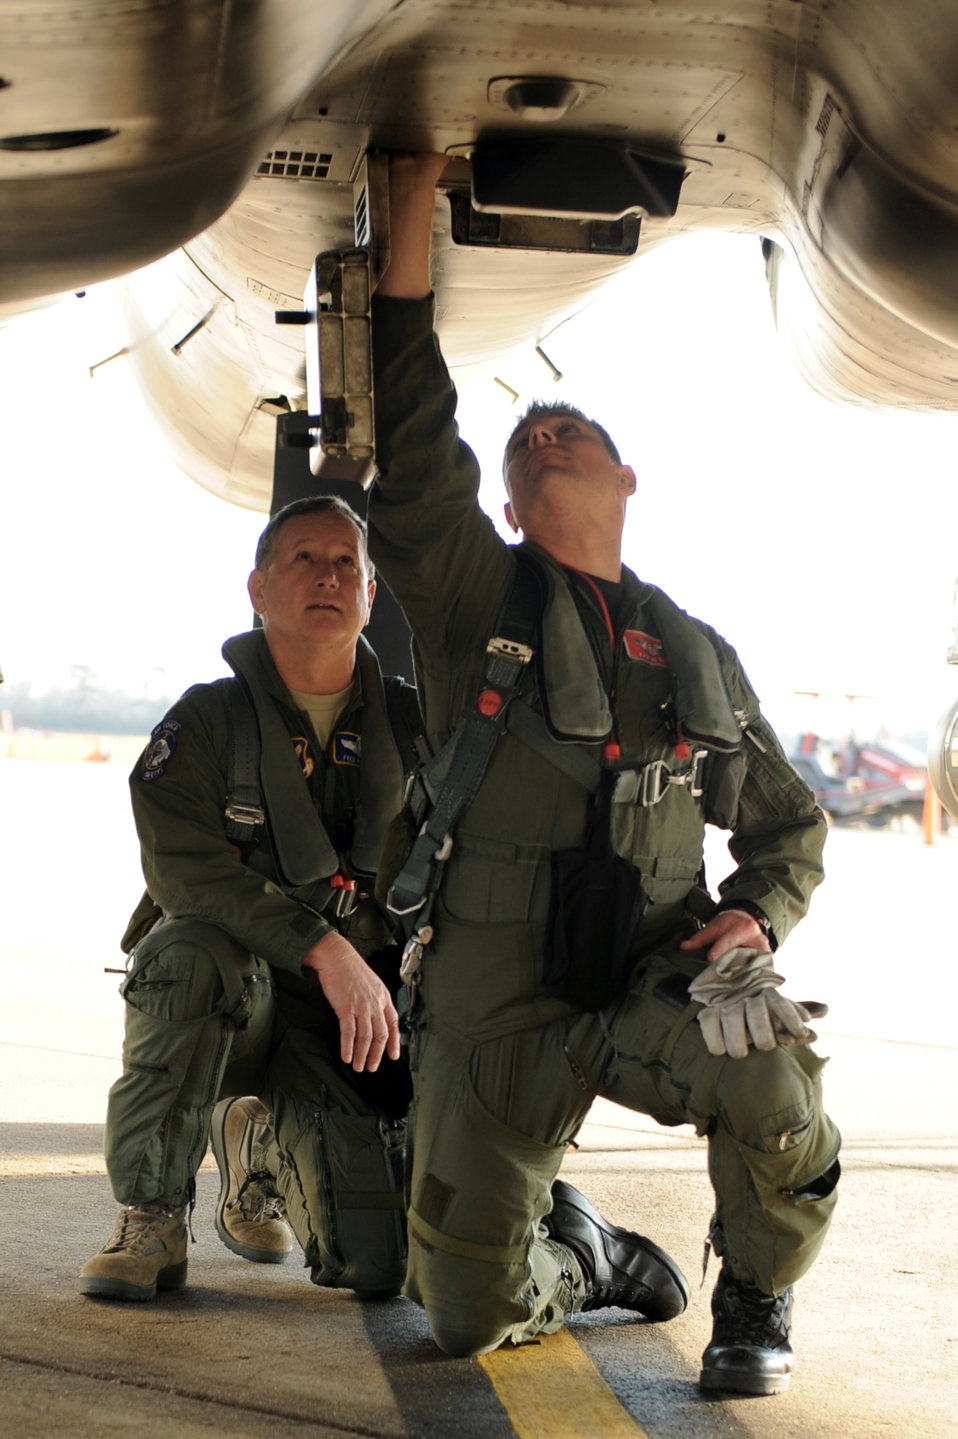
Air Force chief of safety visits Seymour Johnson

Capt. Aaron Reid explains to Maj. Gen. Frederick F. Roggero what to look for during a preflight inspection Jan. 20, 2010, at Seymour Johnson Air Force Base, N.C. Captain Reid is the 333rd Fighter Squadron chief of weapons, and General Roggero is the Air Force chief of safety.